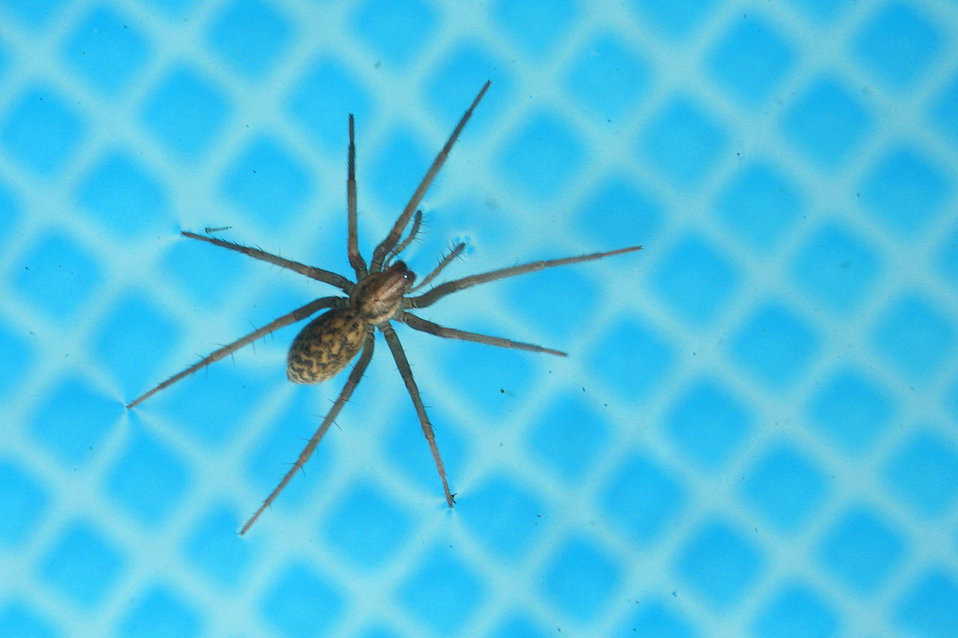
Spider in the pool.